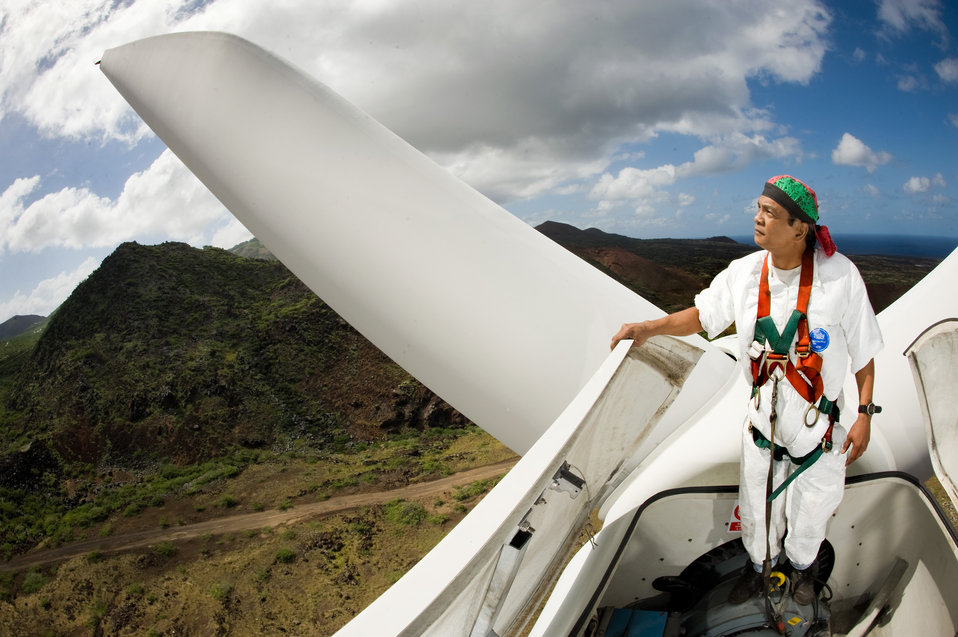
Win with Wind

Mr. Damien Cuello uses the more than 110-foot high view from a 900kW wind turbine to get a better visual inspection of the other 900kW turbine and four other 225kW turbines at 45th Operations Group Detachment 2, Ascension Auxiliary Airfield (AAF), South Atlantic Ocean. The power house operator/ mechanical associate is tethered and stands on the drive-line to get parallel views of the other generator housings. Mr. Cuello is a Computer Sciences Raytheon contract associate in charge of maintenance for the 6-wind turbine facility. The wind turbines work in parallel with low-load diesel generators powering the airfield, Space Command sites and facilities, and a royal air force airfield facility on the island. Ascension AAF's award winning economical self-sufficiency solutions also includes drinking water production and waste water treatment. The mission of Det. 2 is support of eastern range space launches by collecting and disseminating radar, telemetry and tracking data. Ascension island is 35 square miles in a remote island location midway between Brazil and Angola. The nearest country is Liberia - 1000 miles away.